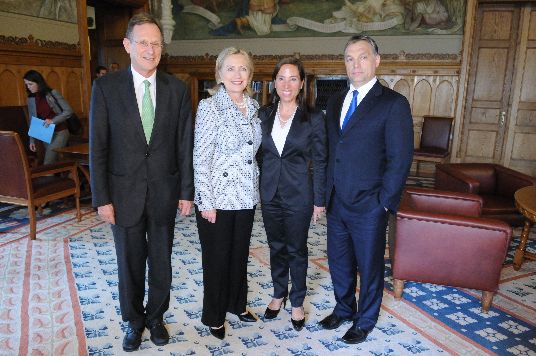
Secretary Clinton Poses for a Photo With Hungarian Prime Minister Orbán, Hungarian Ambassador Szapary, and Ambassador Kounalakis

U.S. Secretary of State Hillary Rodham Clinton poses for a photo with Hungarian Ambassador to the U.S. György Szapáry, left; U.S. Ambassador to Hungary Eleni Tsakopoulos Kounalakis, second from right; and Hungarian Prime Minister Viktor Orbán, right; in Budapest, Hungary, June 30, 2011.